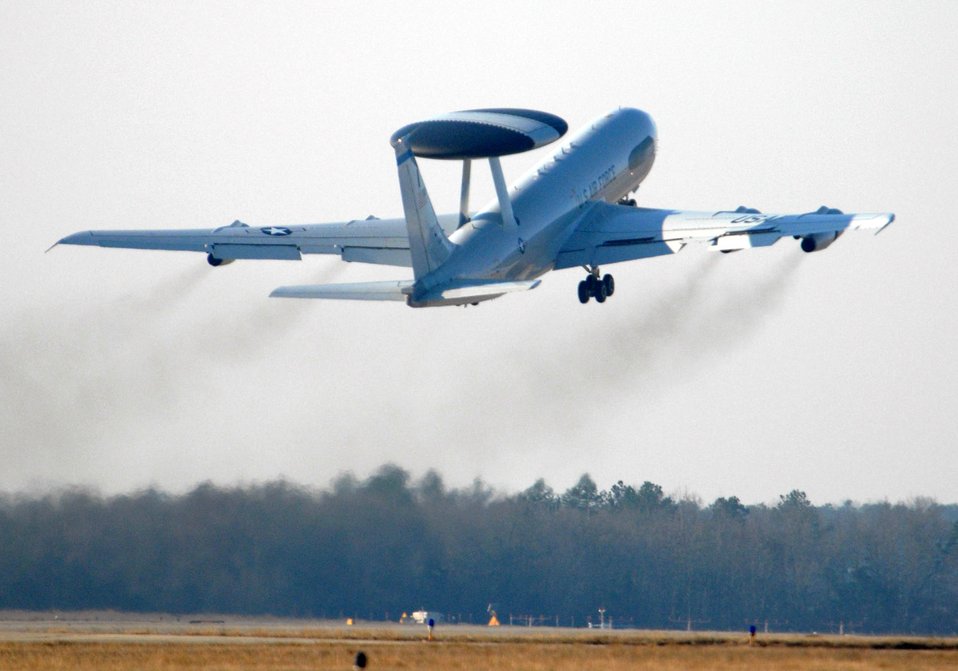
Iron Thunder roars through Shaw

An E-3 Sentry takes off in support of Exercise Iron Thunder Feb. 7 at Shaw Air Force Base, S.C. The excercise helped prepare Airmen for airborne operations while deployed.